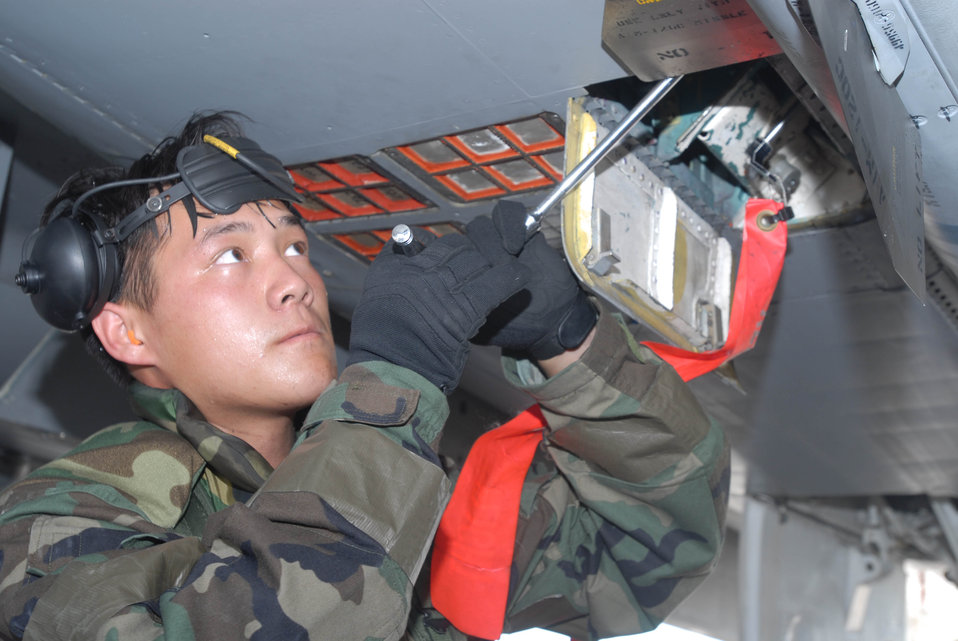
Weapon-loading warriors

Staff Sgt. Fong Vang adjusts equipment on an F-15 Eagle during an combat capability exercise Oct. 18 at Kadena Air Base, Japan. The 18th Wing exercise from Oct. 13 to 19 tested the wing's ability to respond to a wartime situation. Sergeant Vang is assigned to the 18th Aircraft Maintenance Squadron.